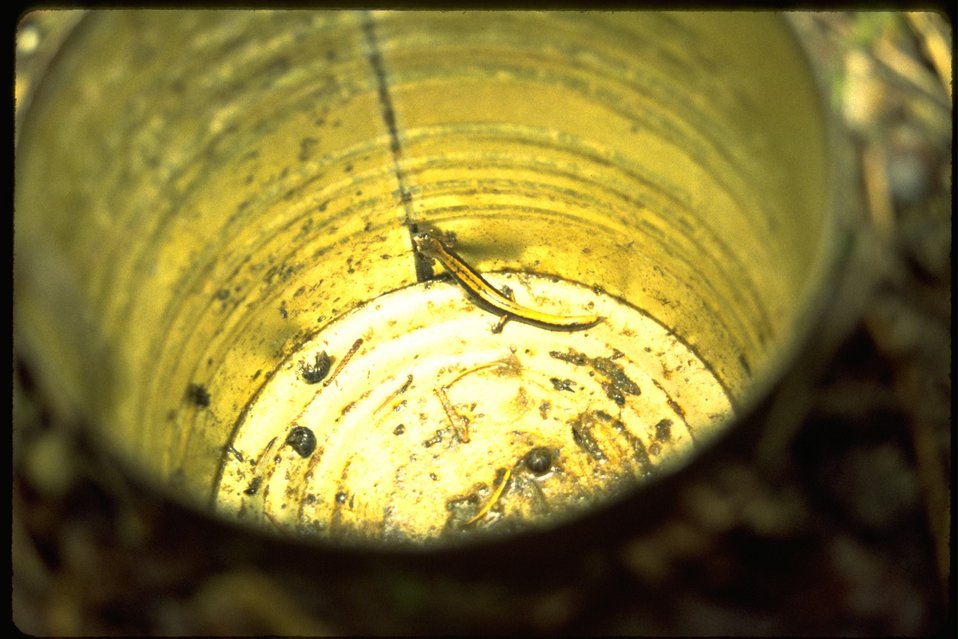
Field worker conducting an amphibian study: amphibian in trap.